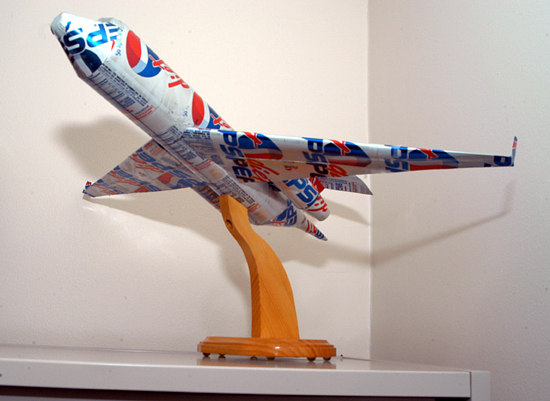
Making art out of recyclables

ANDREWS AIR FORCE BASE, Md. -- Helen Walker uses all types of cans and recycled materials to create a variety of sculptures, including aircraft. She is currently saving cans to create a replica Air Force One. She is the 89th Civil Engineer Squadron's maintenance flight quality assurance evaluator.